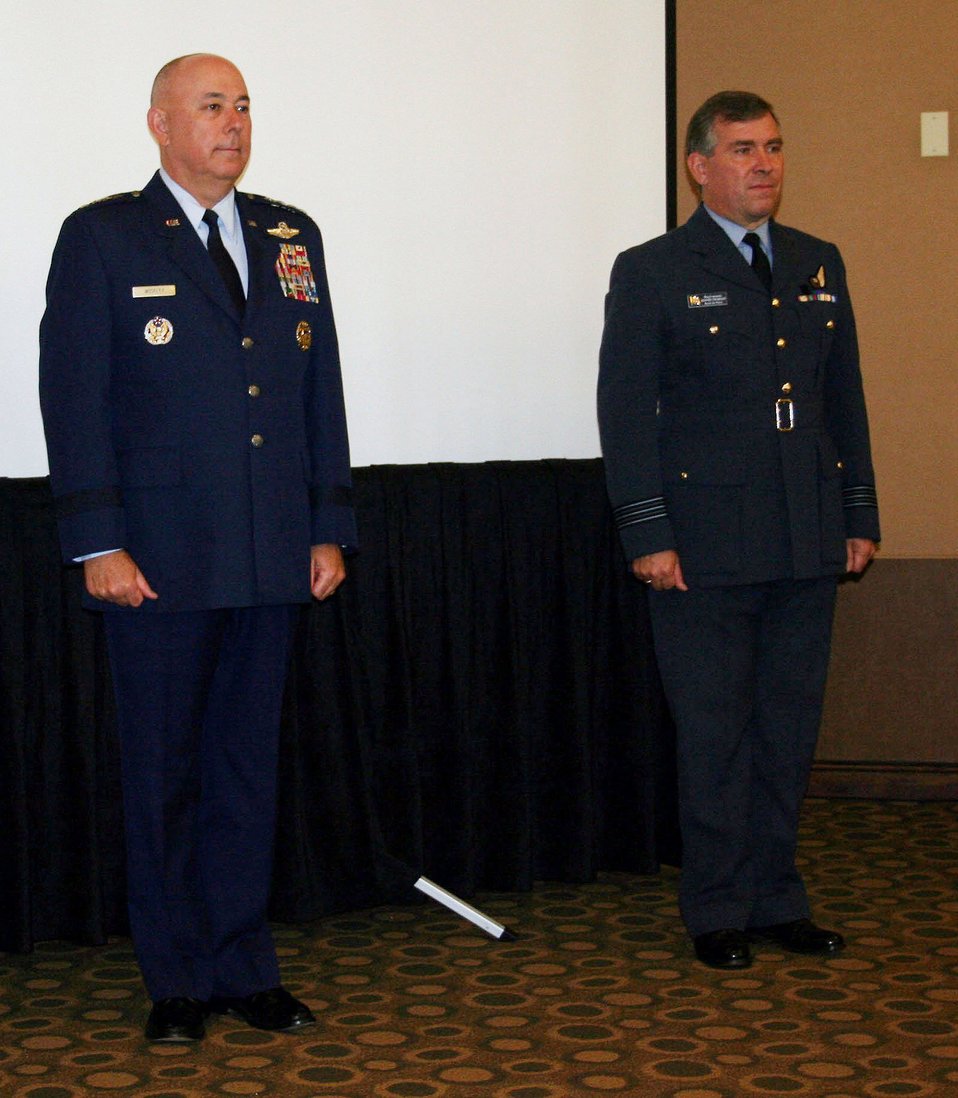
CSAF presents Bronze Star to Royal Air Force exchange officer

Chief of Staff Gen. T. Michael Moseley presented the Bronze Star Medal to Royal Air Force Wing Commander Red Thompson during a ceremony in Washington D.C. Oct. 19.